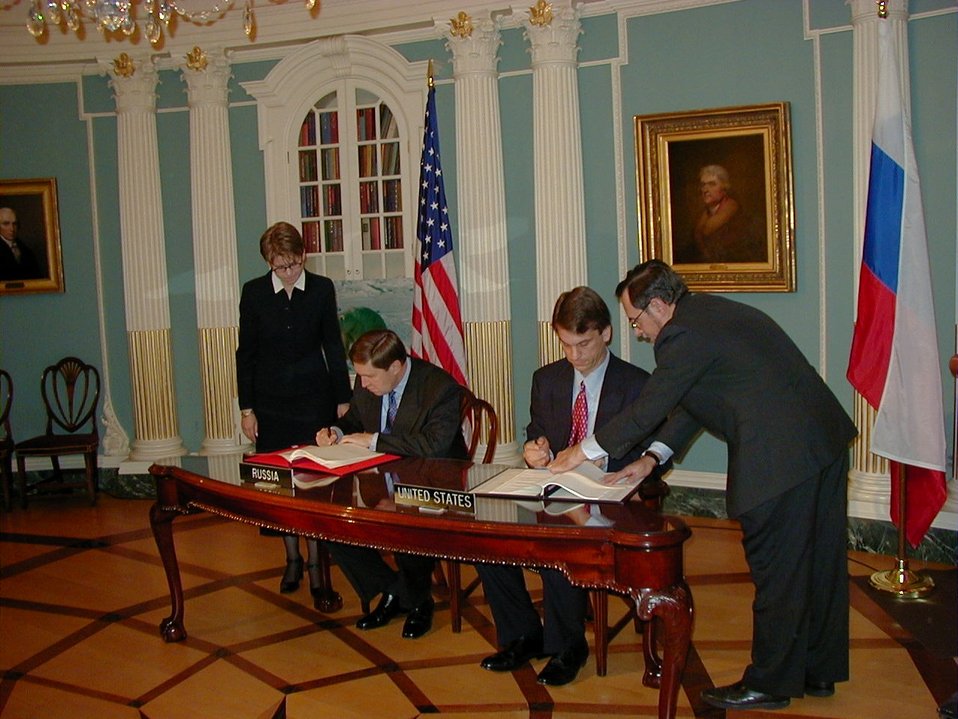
Russia Signing

Signing of U.S.-Russia Polar Bear Agreement in 2000.